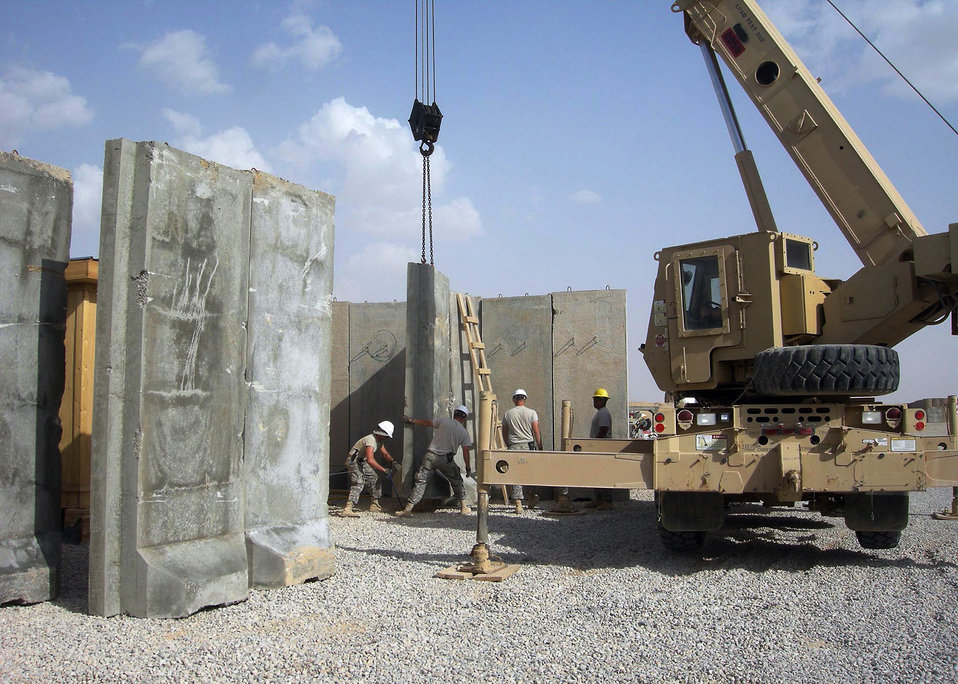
Civil engineers answer the call

Airmen from the 732nd Expeditionary Civil Engineer Squadron Det 3 place huge barriers around Patrol Base Shocker, Iraq, to increase force protection measures. The Airmen from Patrick Air Force Base, Fla., were part of a construction team sent to support the beddown of 140 additional Soldiers to be assigned here.